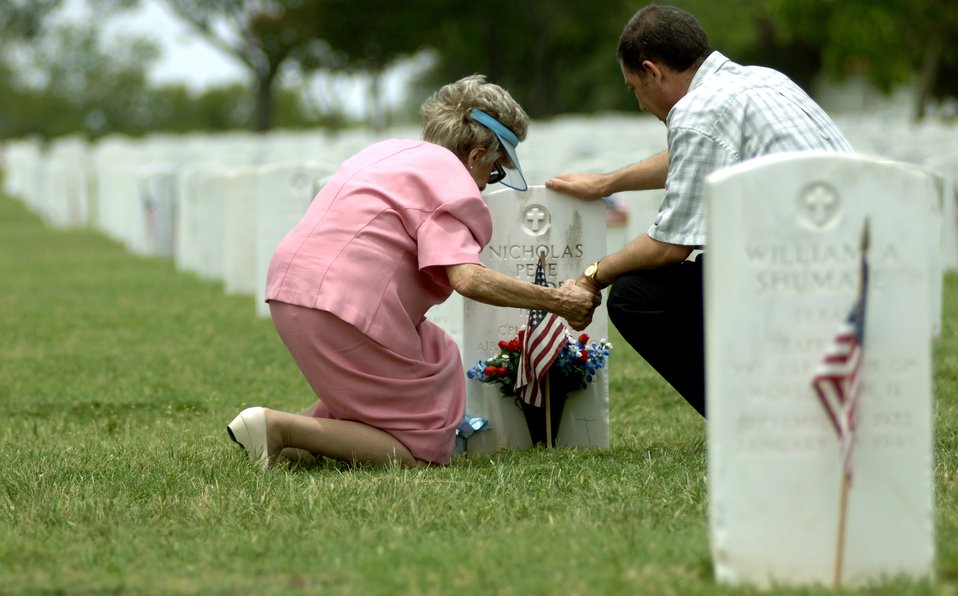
Memorial Day observances

Mary Royalty and her son, David, hold hands and pray at her father's grave site at Fort Sam Houston National Cemetery in San Antonio on Sunday, May 28, 2006. Members of her family, who immigrated from Greece, have served in the U.S. military since before World War I.